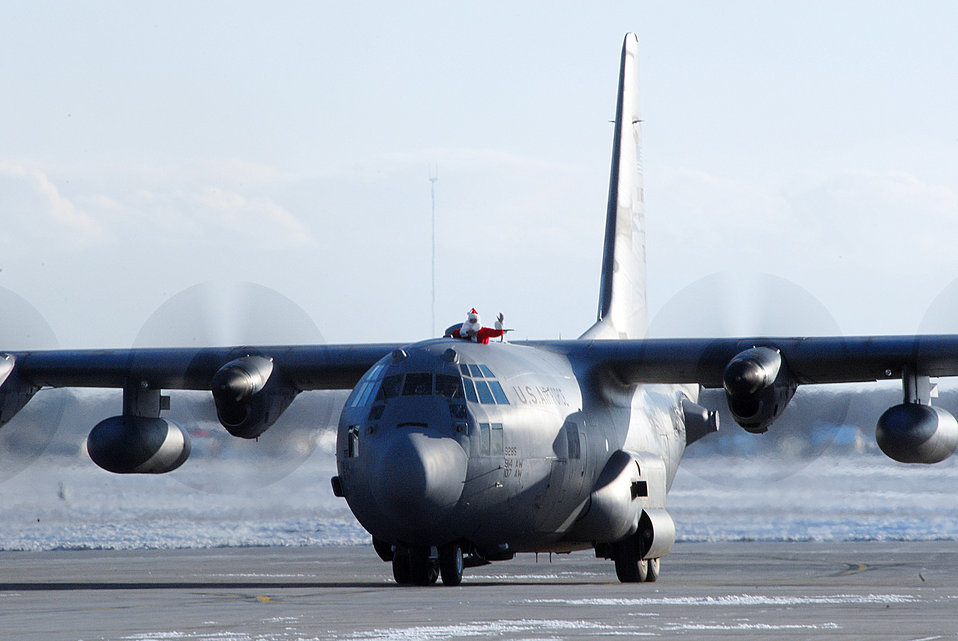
Santa is coming to town

Airmen from the 107th Airlift Wing give Santa a rideon a C-130 Hercules during Operation Toy Drop, Dec. 12, 2011, at Niagra Falls Air Reserve Station, Niagra Falls, N.Y. Operation Toy Drop is a week-long, philanthropic project where both American and foreign paratroopers stationed at Fort Bragg, N.C. individually contribute new, unwrapped toys to be distributed to local children's homes and social service agencies.